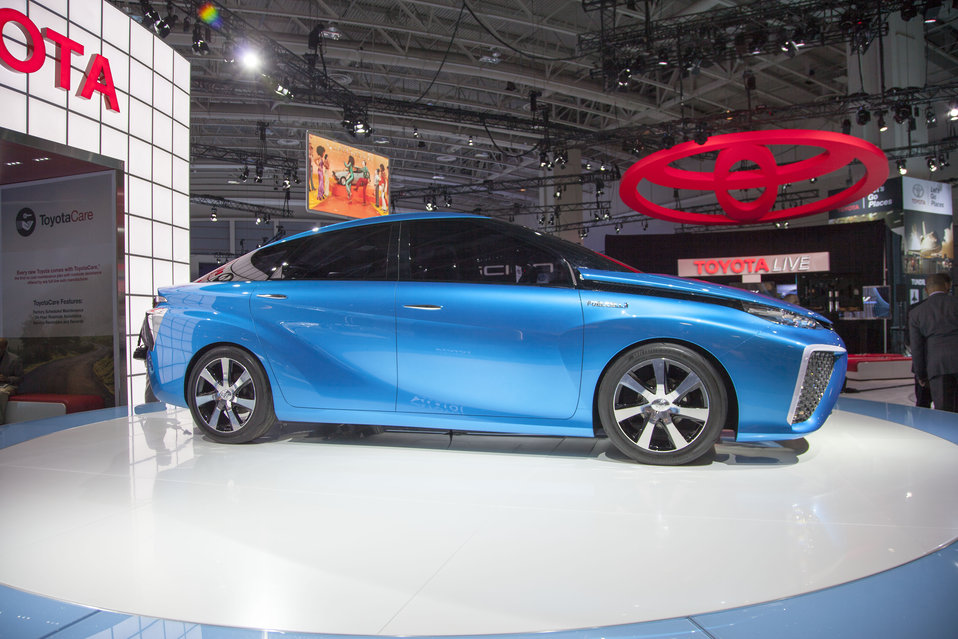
Secretary Moniz checks out Toyota’s fuel cell concept vehicle at the Washington Auto Show. The vehicle will be able to cover about 310 miles in a single hydrogen fill-up and will be available in 2015. The Energy Department’s work to reduce the costs of fuel cells and components like catalysts has helped lay the foundation for fuel cell vehicles like Toyota’s.